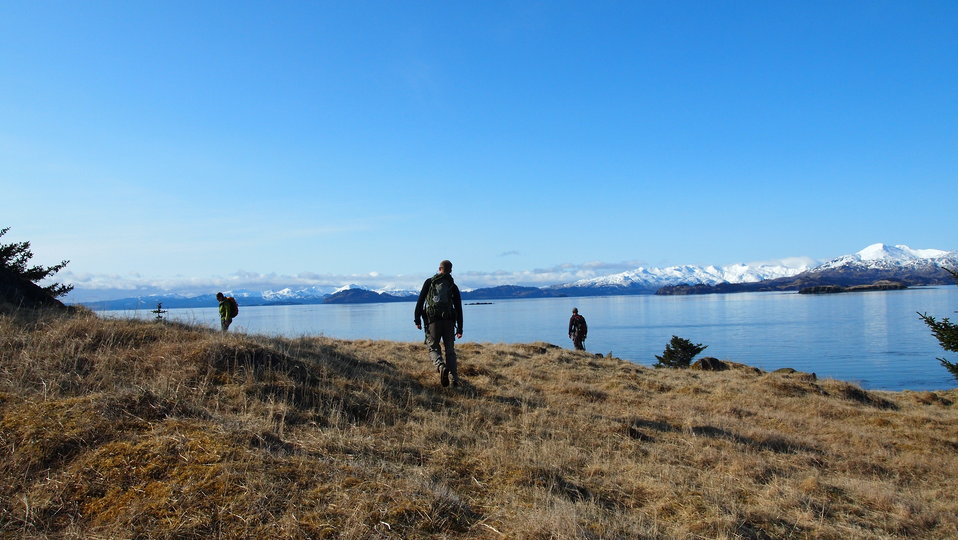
Mountain Goat Research Crew

Volunteer Interns and Crew Leader for 2012 Mountain Goat Habitat Study conducting research at Hepburn Peninsula, overlooking the Southeast end of Kodiak Island

Contact: lisa hupp@fws.gov

Source: Kodiak NWR